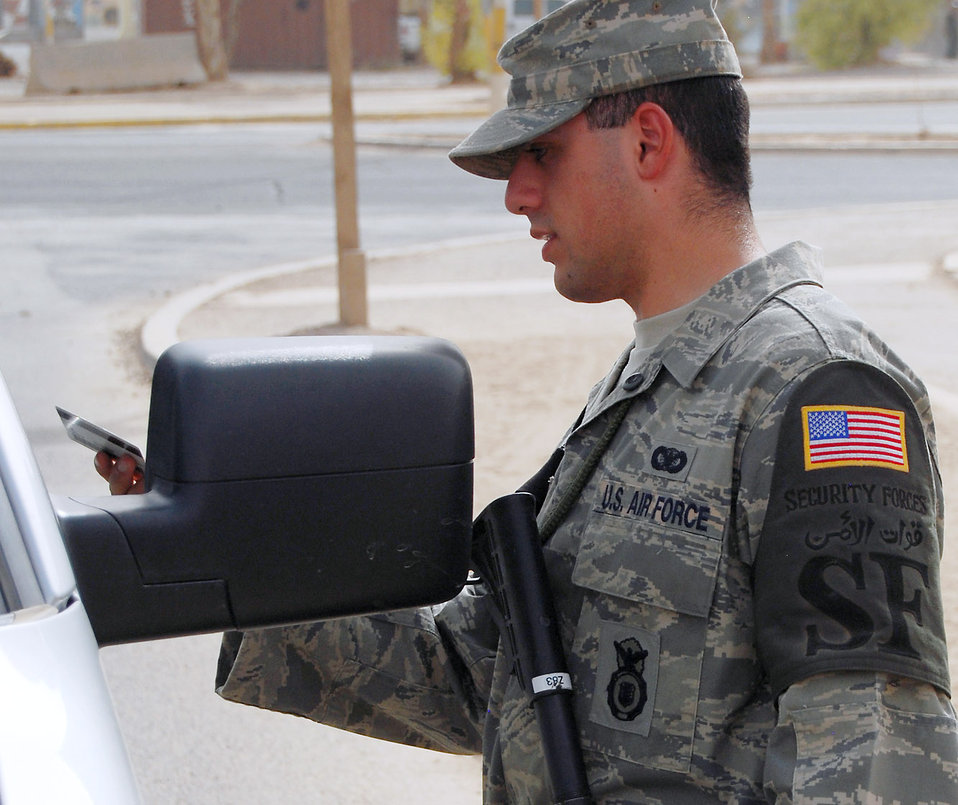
Baghdad native returns to Iraq as an American Airman

Airman 1st Class Murad Mohiadeen checks the identification of a vehicle operator at an entry control point to the Air Force Theater Hospital Aug. 2 at Joint Base Balad, Iraq. Airman Mohiadeen, a native of Baghdad, was raised in the United States after his family emigrated from Iraq in 1990. Airman Mohiadeen is a security forces apprentice with the 332nd Expeditionary Security Forces Squadron and is deployed from Royal Air Force Lakenheath, England.